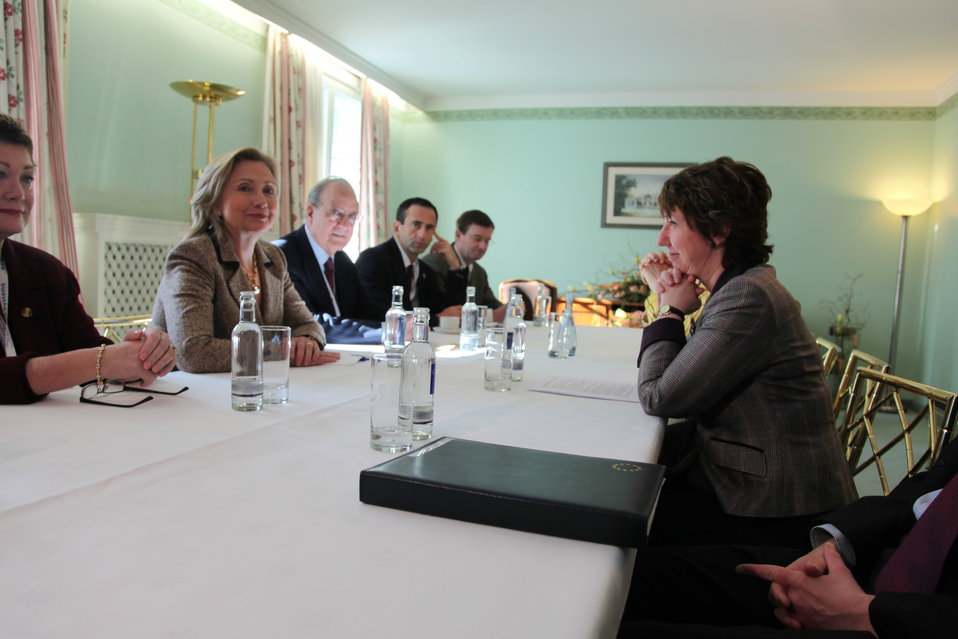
Secretary Clinton Holds a Bilateral Meeting With EU High Representative Ashton

U.S. Secretary of State Hillary Rodham Clinton, with U.S. Special Envoy for Middle East Peace George Mitchell, right of the Secretary, and U.S. Assistant Secretary for European and Eurasian Affairs Philip H. Gordon, second to the right of the Secretary, holds a bilateral meeting with EU High Representative Lady Catherine Ashton in Munich, Germany, on February 5, 2011.